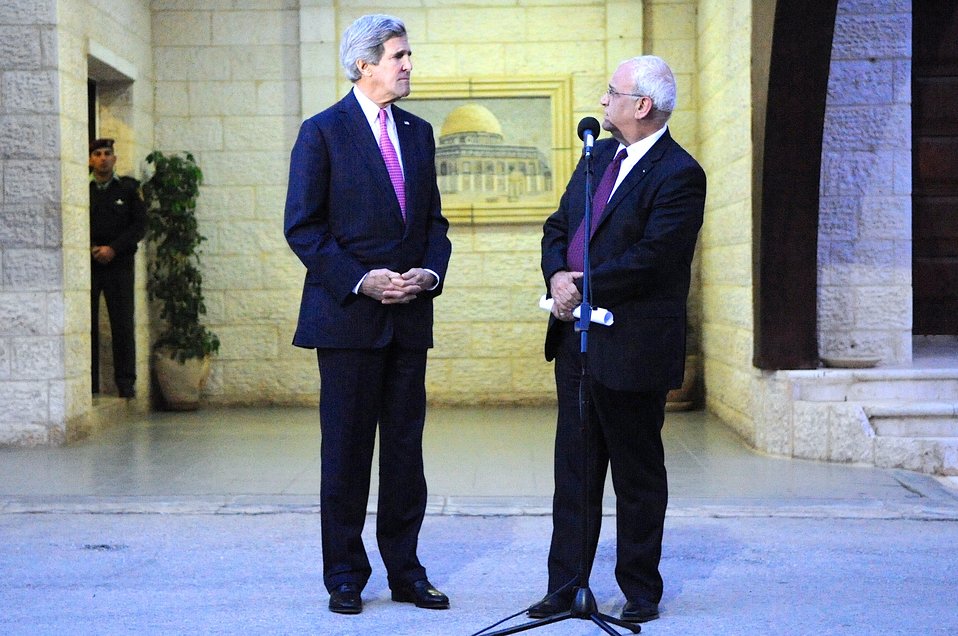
Palestinian Negotiator Erekat Addresses Reporters With Secretary Kerry in West Bank

Palestinian Authority Lead Negotiator Saeb Erekat faces U.S. Secretary of State John Kerry as both address reporters following a meeting focused on Middle East peace at the Muqata'a Presidential Compound in Ramallah, West Bank, on January 4, 2013.